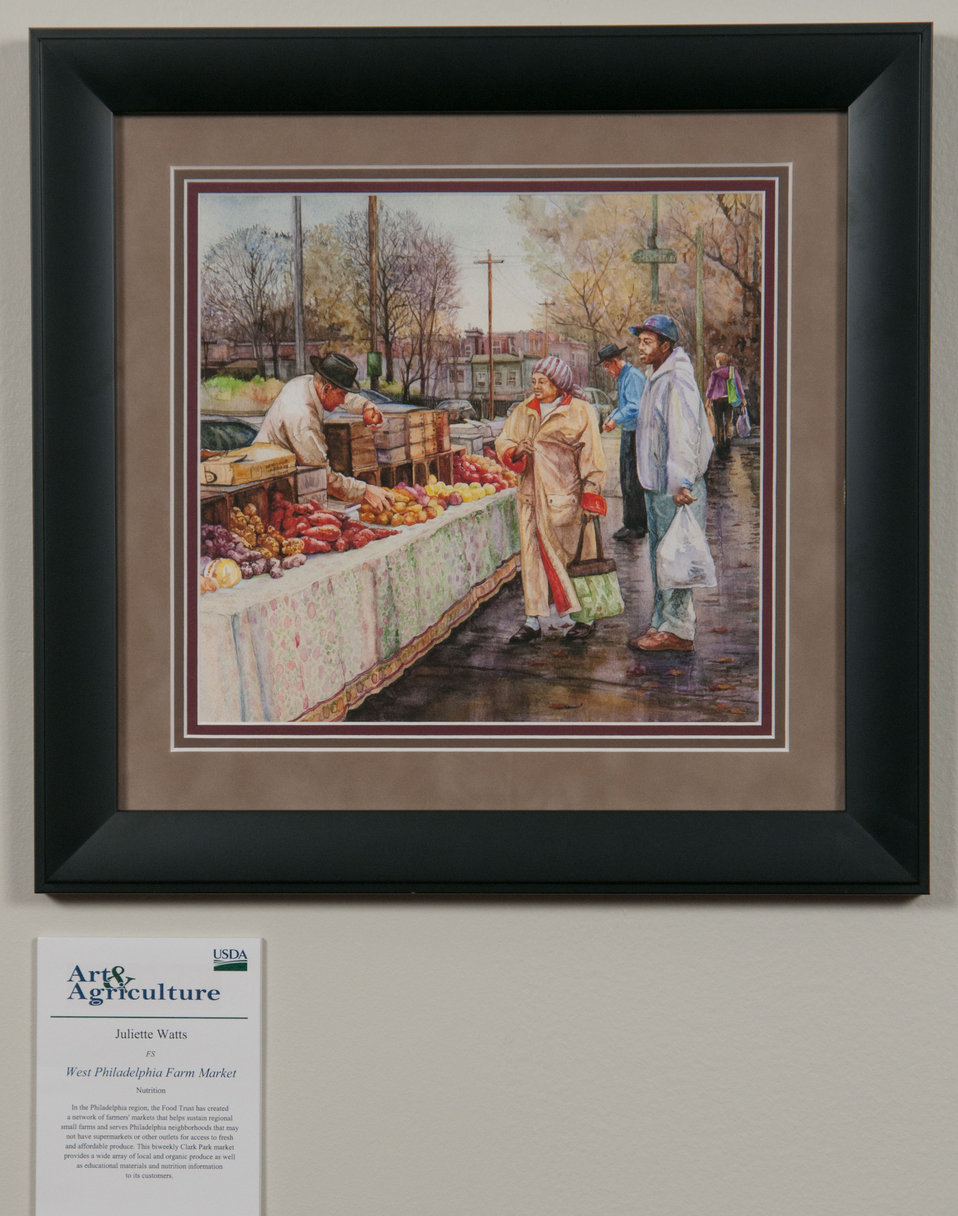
Online Viewer's Choice entries of the 2013 Art & Agriculture, Tuesday, July 9, 2013, in the South Building, Washington, D.C. Themes were expressed by employees from across the department and the contest was open to full-time and part-time USDA employees. Winning artwork will be displayed till the end of the year. U.S. Artistic expression is a creative outlet that is vital for an individual to grow and develop.